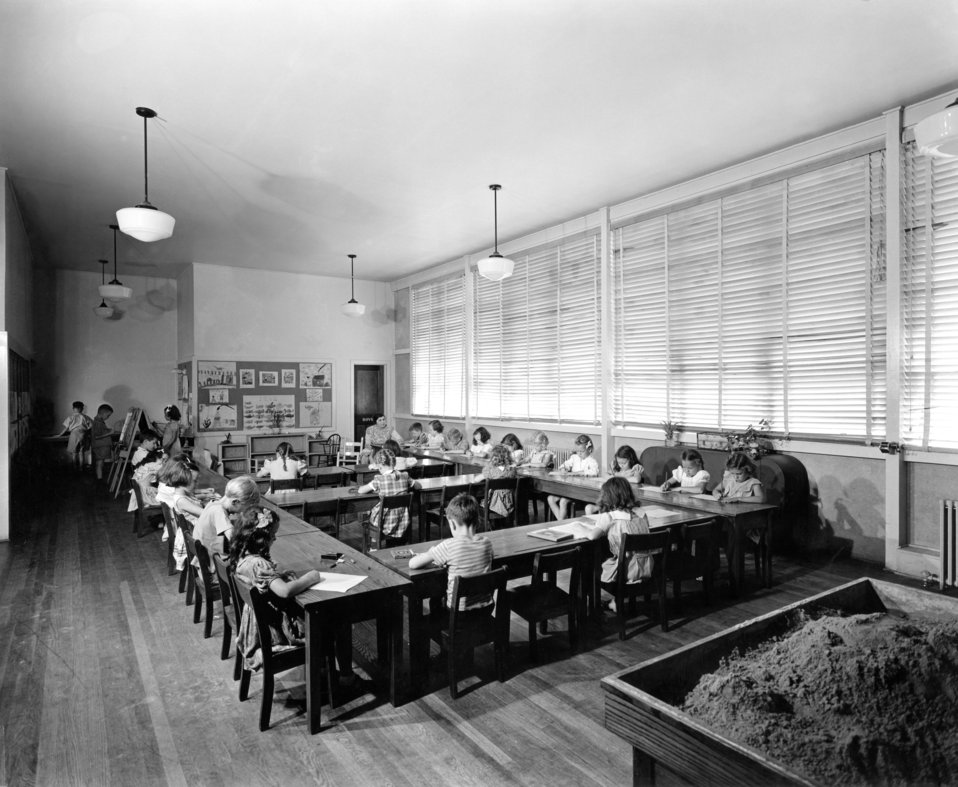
Clinton Engineering Works Elementary School Interior Oak Ridge 1944

MED155 DOE photo Ed Westcott 1944 Oak Ridge Tennessee